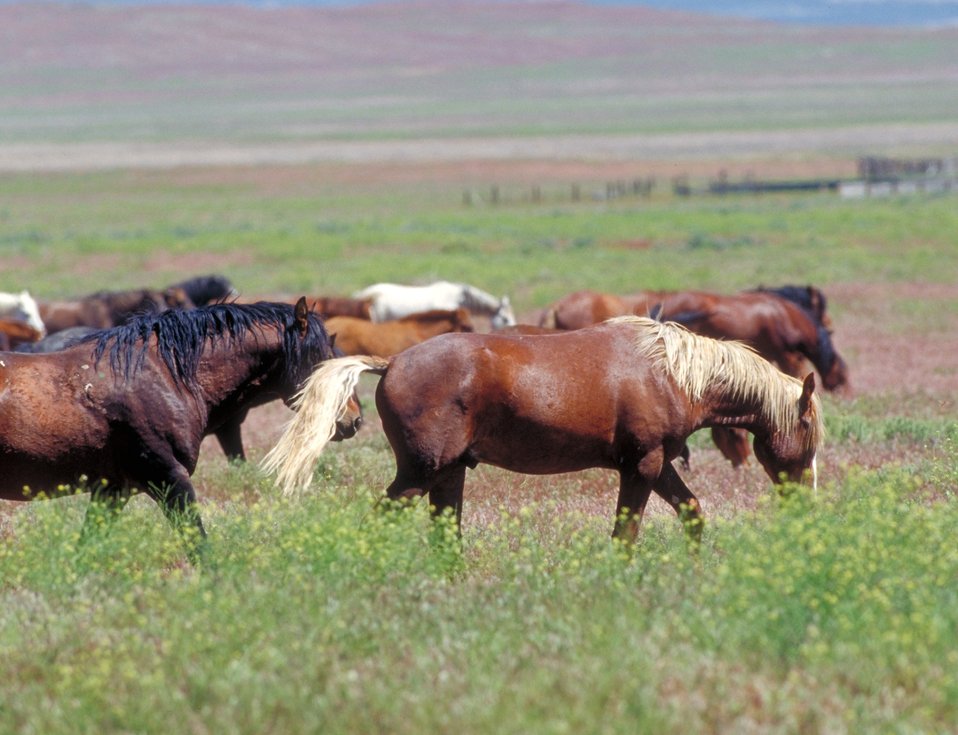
Onaqui Herd near Dugway, Utah.